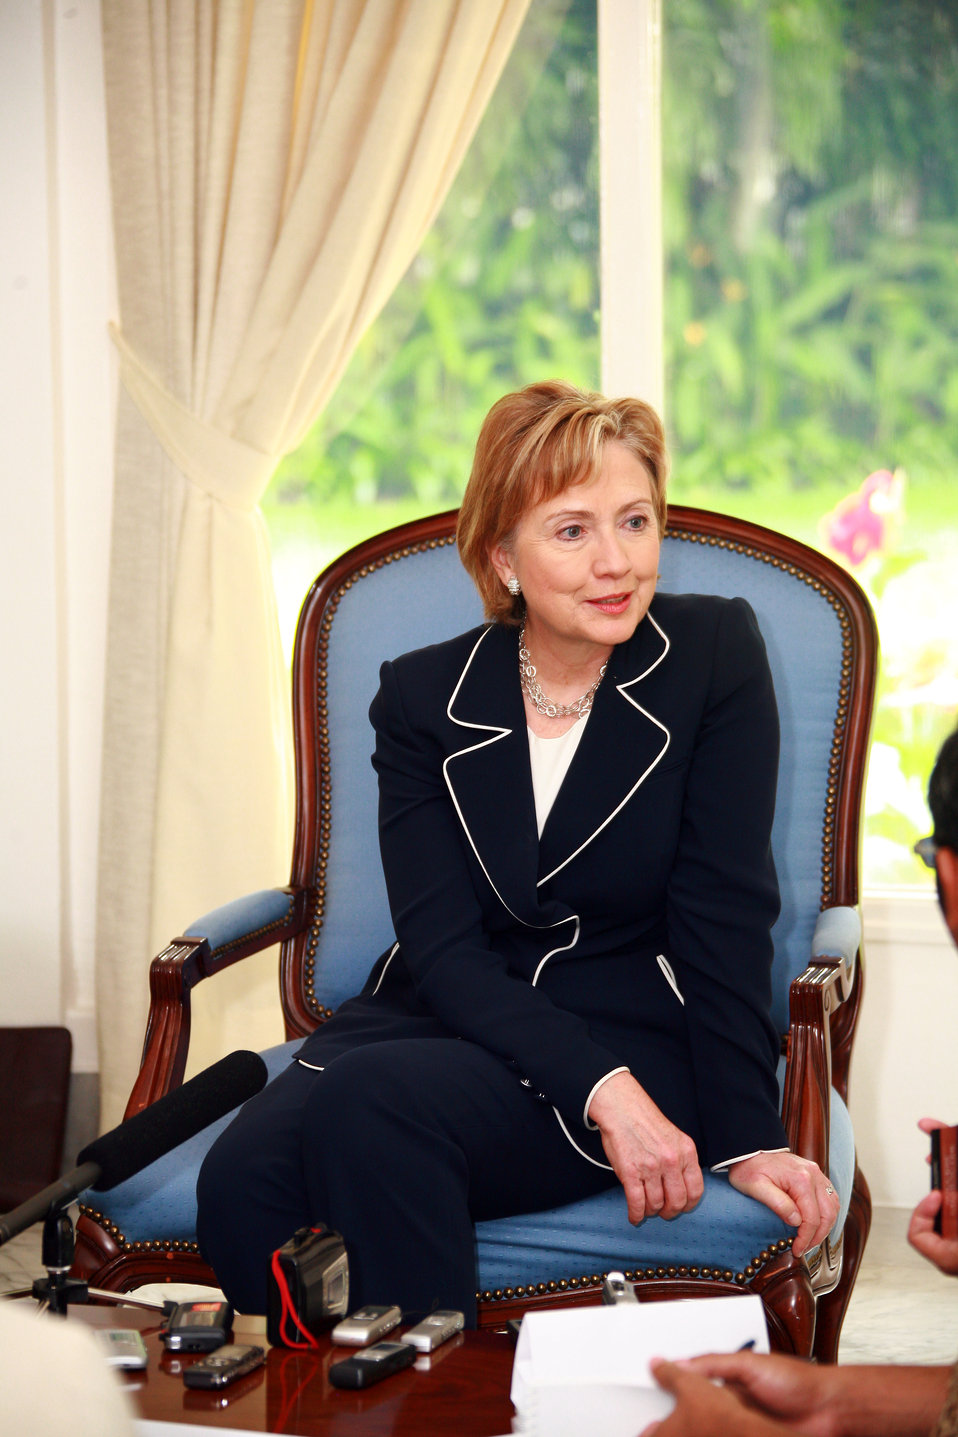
Secretary Clinton Leads Jakarta Media Roundtable

Secretary Clinton leads a media Roundtable at the U.S. Ambassador’s Residence in Jakarta, Indonesia February 19, 2009.